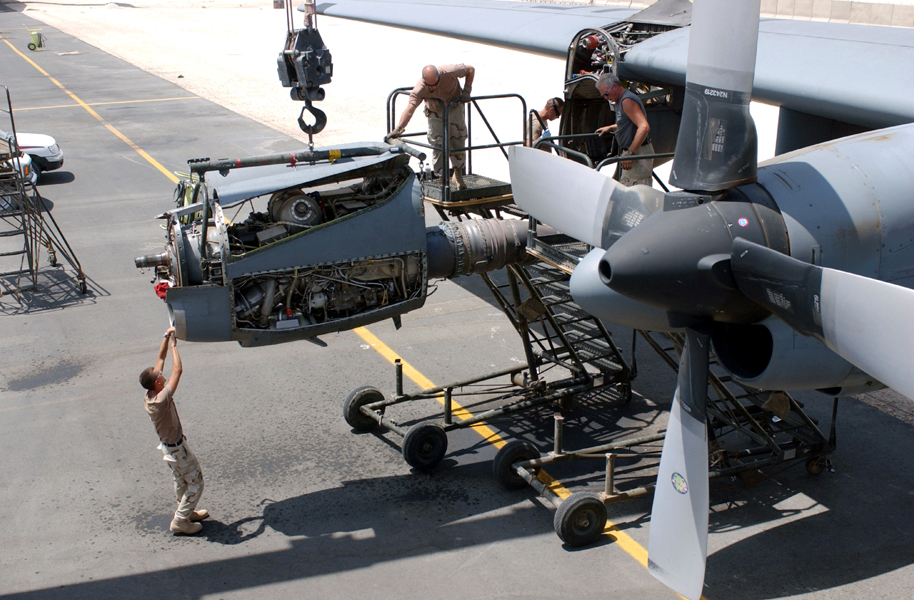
Steady as she goes

OPERATION IRAQI FREEDOM -- Senior Airman Tim Roberts steadies a C-130 Hercules engine as it is being hoisted off the aircraft for a routine inspection. The airman is from the Missouri Air National Guard's 139th Airlift Wing supporting Operation Iraqi Freedom from a forward-deployed location in Southwest Asia.